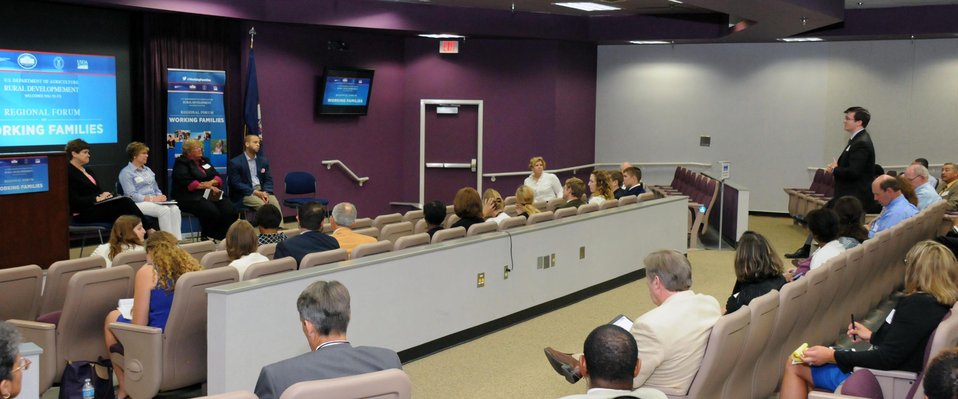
Agriculture Deputy Secretary Krysta Harden speaks at a regional forum of the White House Summit on Working Families in Petersburg, VA Wednesday, Jun. 11, 2014. The forum brings together stakeholders with government and regional leaders to identify initiatives for working families and businesses in rural areas. This forum is part of a series of regionally hosted conversations leading up to the Jun. 23, 2014 White House Summit on Working Families.